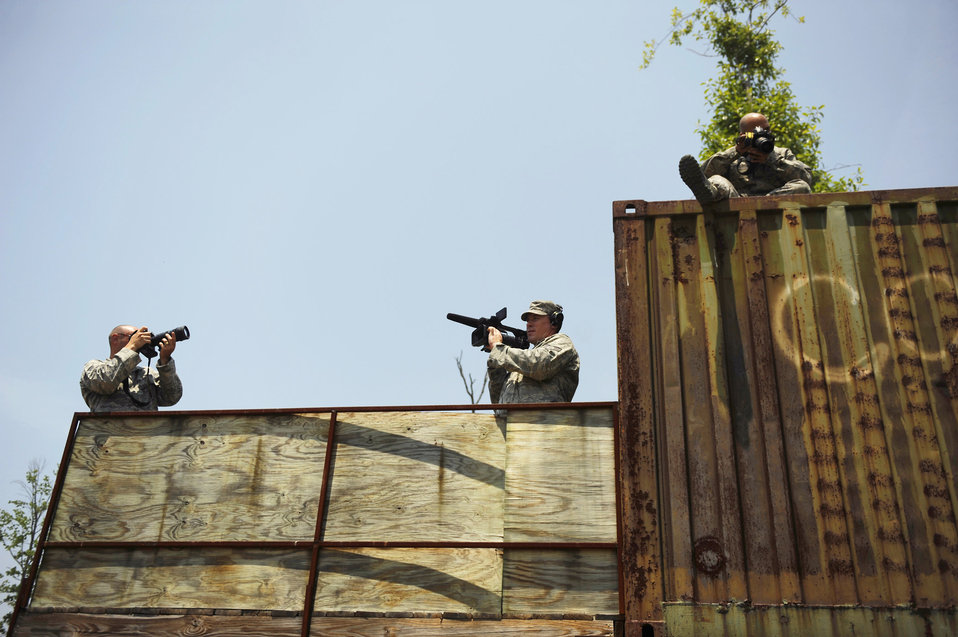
Smile, you're on camera

Combat camera photographers document participants June 12, 2011, during a training exercise at the Clarks Hill Training Site near Joint Base Charleston, S.C.